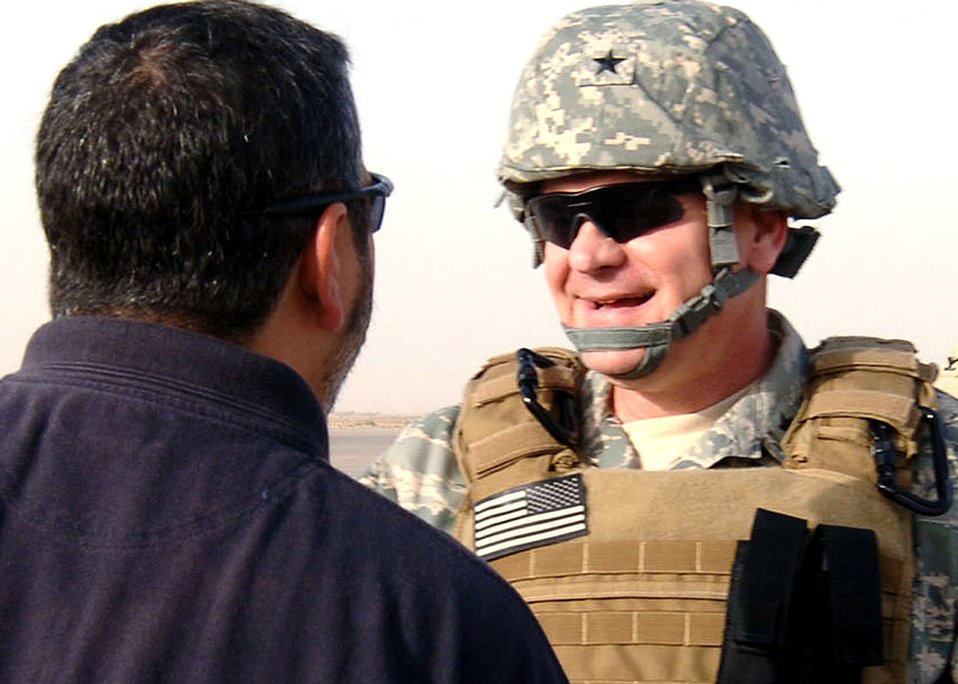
AFOSI commander: 'Can do' attitude makes agents stand out

An Office of Special Investigation Det. 2408 agent greets Brig. Gen. Dana Simmons upon his arrival at Sather Air Base, Iraq, last month. During the visit, the general met with AFOSI detachments on Victory Base Complex to hear first-hand accounts about their missions. General Simmons is the Air Force Office of Special Investigations commander.